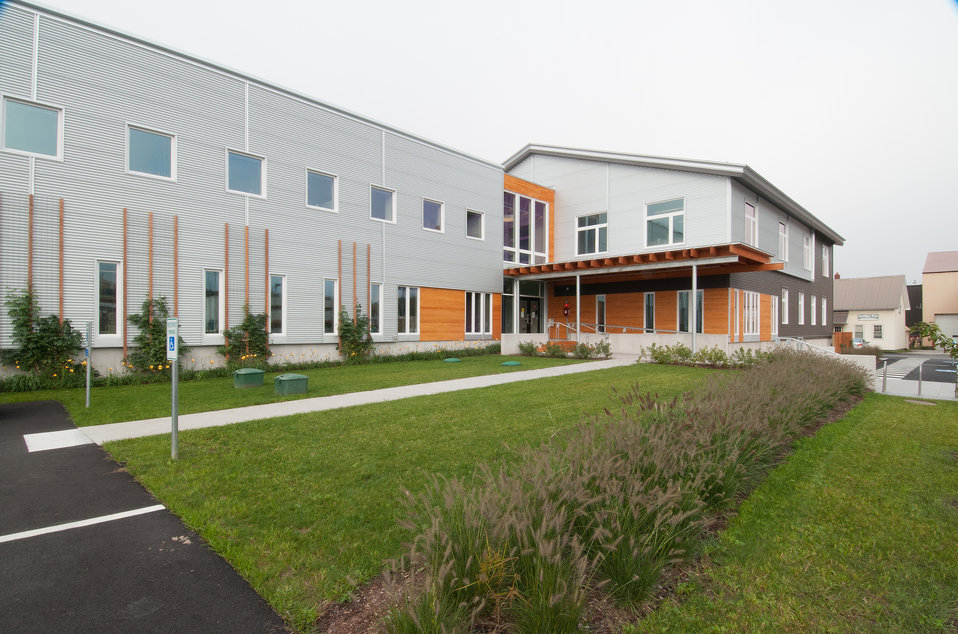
Through the assistance of a U.S. Department of Agriculture (USDA) Rural Development (RD) Community Facilities Grant the Central Vermont Community Action Council whose mission is to create economic security for low to moderate income residents in rural Central Vermont consolidated many of its programs and more than half of its employees into one campus in downtown Barre, VT on Sep. 17, 2013.